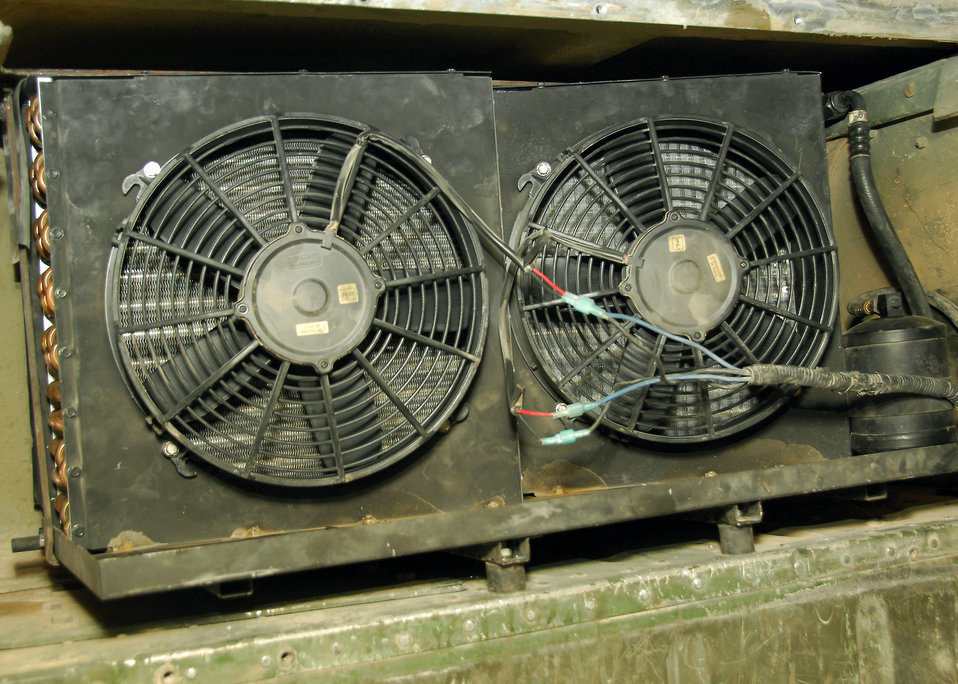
Humvee Modification

Pictured is a modified air-conditioning fan and condenser in a M1116 Humvee at a base in Southwest Asia July 21. Tech. Sgt. Paul Gardner is credited with the idea of modifying the unit because the Humvees were being brought in continuously for similar air-conditioning maintenance. He created a specially made L-shaped bracket for the assembly and replaced smaller mounting nut and bolt hardware with larger sizes. Sergeant Gardner is assigned to the 386th Expeditionary Logistics Readiness Squadron.